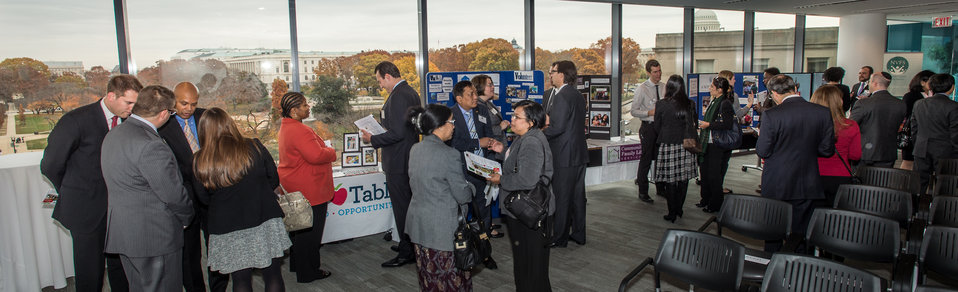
The Share the Season event organized by the U.S. Department of State Office of the Chief of Protocol Diplomatic Partnership Division, and sponsored by Walmart and The Coca-Cola Company was held at the Business Roundtable (BRT) in Washington, D.C. on Thursday, Nov. 21, 2013. BRT is a non-profit association of chief executive officers of leading U.S. companies that encourages embassies and diplomats to be active in local community service projects.